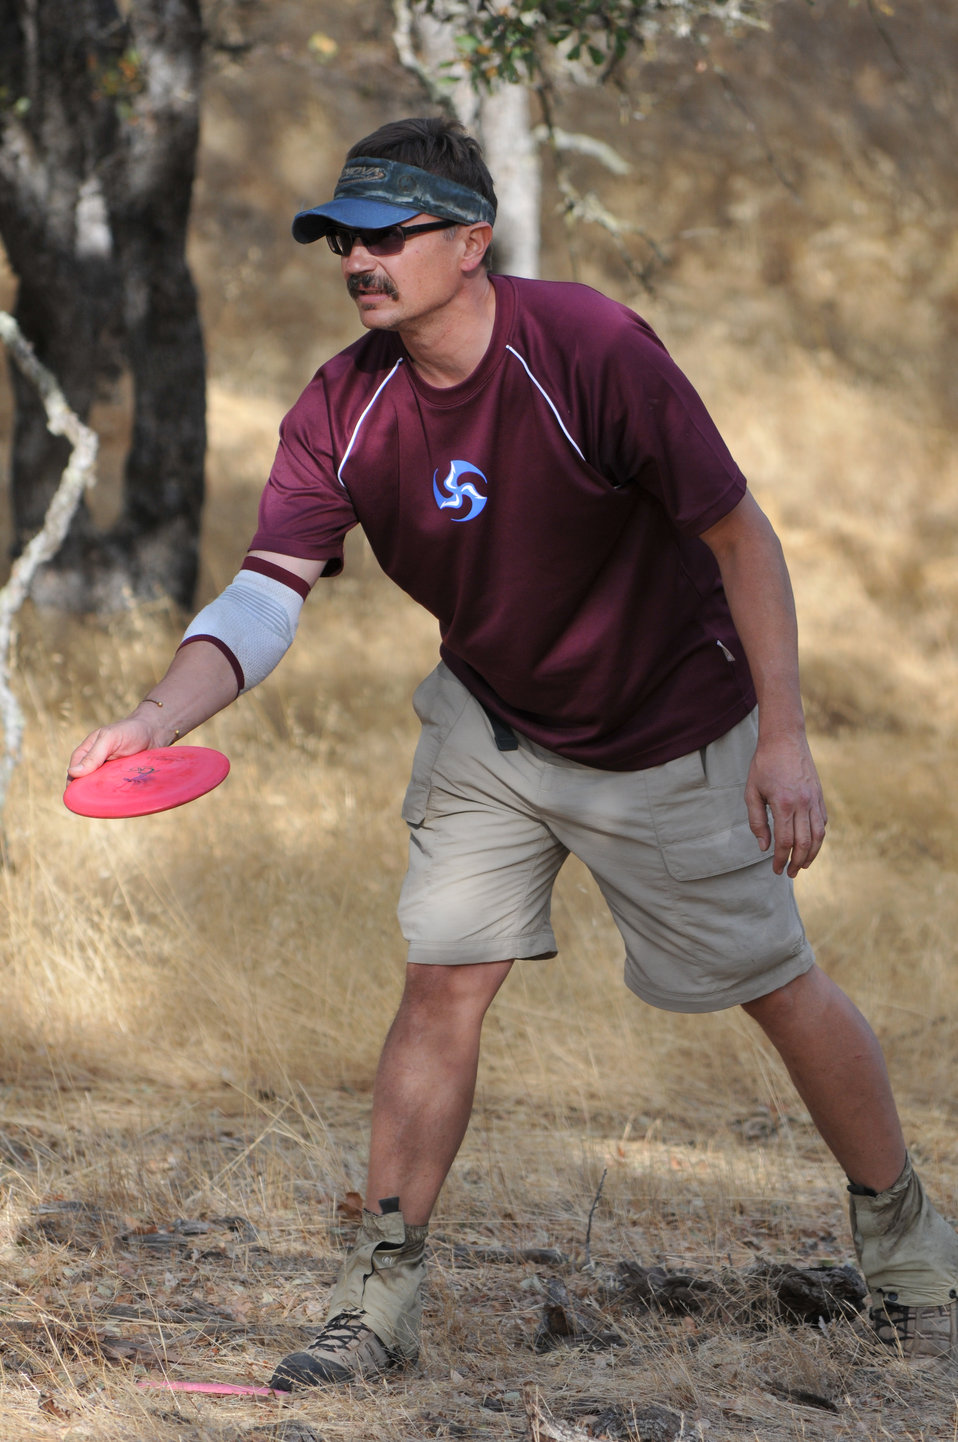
BLACK BUTTE LAKE, Calif. (Oct. 18, 2010) -- A disc golfer tees off during the Professional Disc Golf Association's Norcal Series Championships here Oct. 16. The U.S. Army Corps of Engineers Sacramento District’s Black Butte hosted the tournament Oct. 15-17 at its new disc golf course, built on park lands by The Orland Aces disc golf club under a partnership with the Corps. More than 150 disc golfers from as far as Texas competed in the tournament.